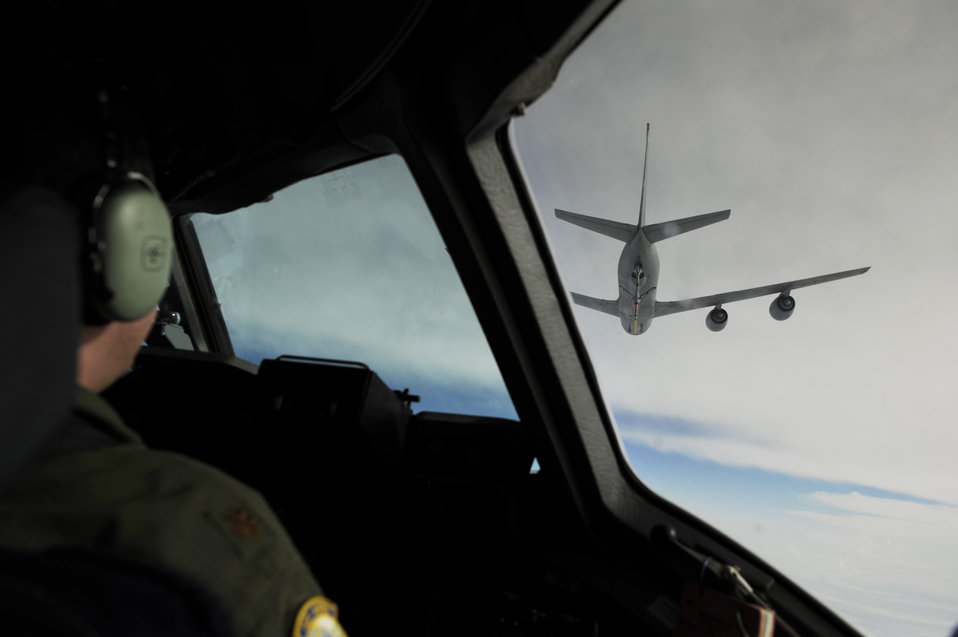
Charleston aircrew refuel near MacDill

Maj. Mark Laverne watches while closing in on a KC-135 Stratotanker from MacDill Air Force Base, Fla., during a training mission March 12, 2010, aboard a C-17 Globemaster III. Major Laverne is from the 300th Airlift Squadron at Charleston AFB, S.C.